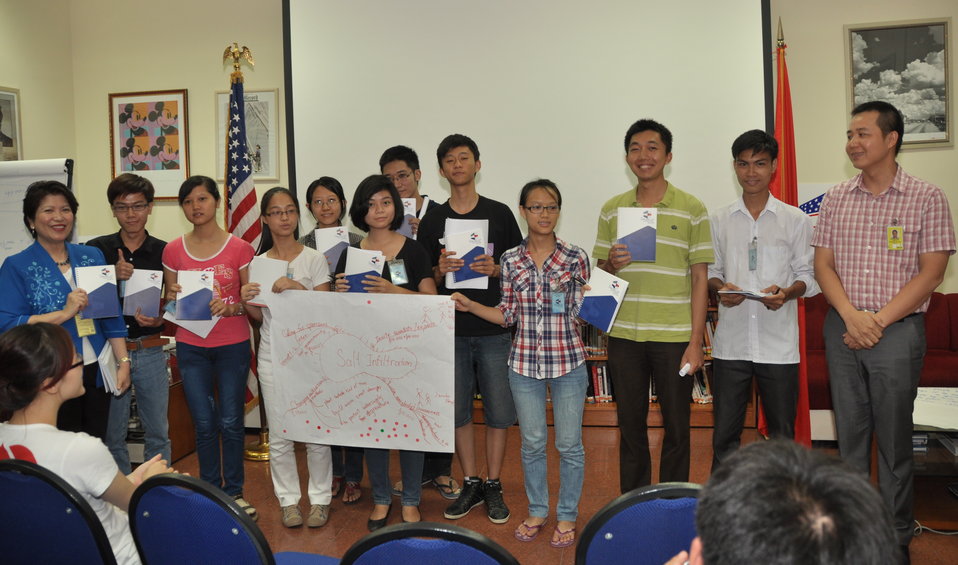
Climate Change Talk at the American Center

Hanoi, May 28, 2013.